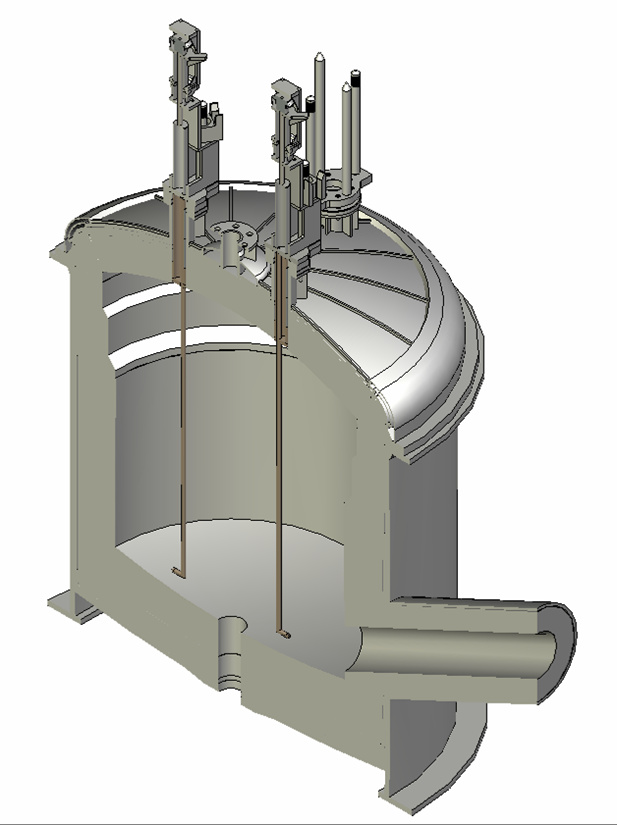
Bubbler Technology

Shown here is a drawing of the Savannah River Site (SRS)’s Defense Waste Processing Facility melter with two bubblers inserted. The new bubbler technology and other enhancements are expected to double the amount of radioactive waste processed annually at SRS.